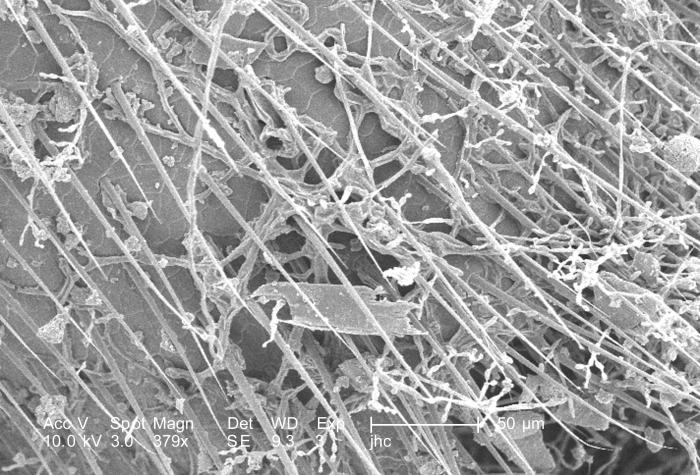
Under a low magnification of 379X, approximately 8x greater than PHIL 9979, this scanning electron micrograph (SEM) revealed some of the ultrastructural morphology found on the exoskeletal surface of an unidentified insect. Most apparent is the furry appearance created by the presence of numerous "hairs", known as 'setae', which are chitinous in their composition, unlike true mammalian hairs, which are made up of keratin.